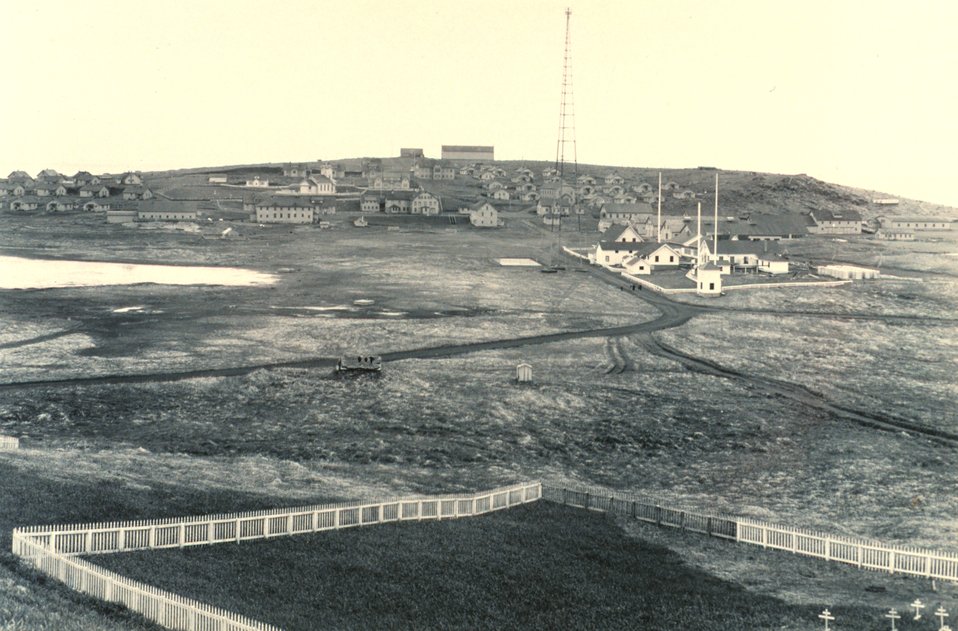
St. Paul village on the island of St. Paul. The Native Americans here are carried on the fur seal industry under the supervision of the Fish and Wildlife Service at the time of this photo. Today the National Marine Fisheries Service monitors the fur seal industry.